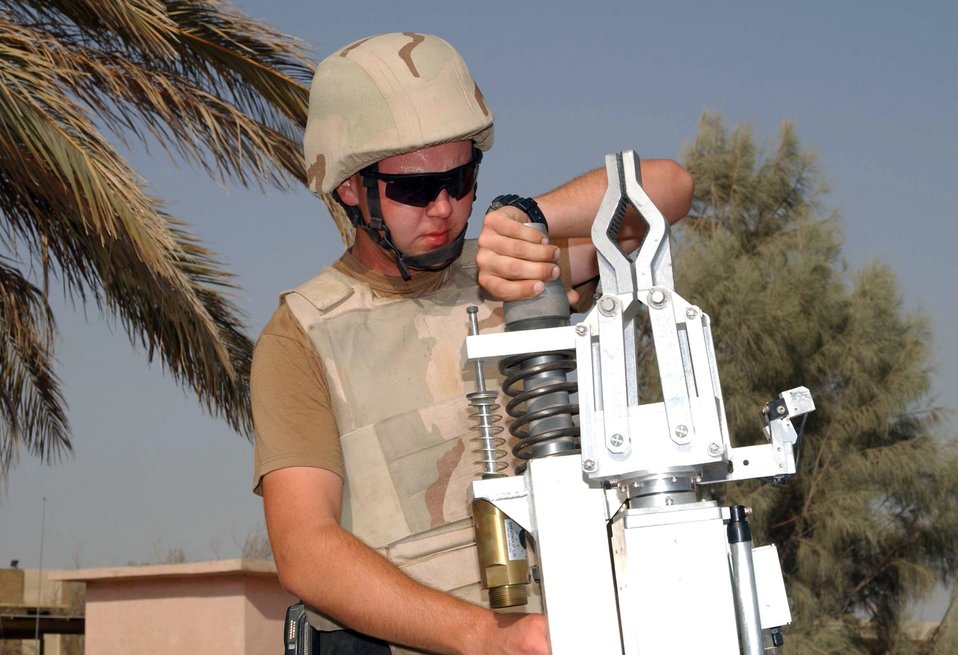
EOD Airmen rely on high-tech, raw nerves

ALI BASE, Iraq -- Airman 1st Class Ian Wise installs an explosive cartridge into the firing attachment of a robot before it investigates a suspicious package found unattended on base. He is an explosive ordnance disposal technician with the 407th Air Expeditionary Group.